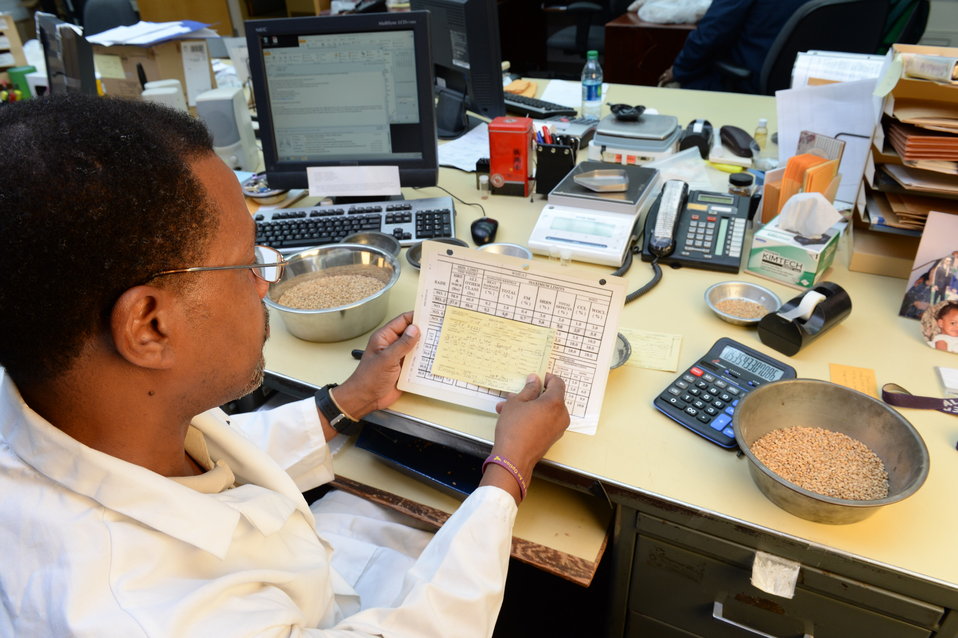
U.S. Department of Agriculture (USDA) Grain Inspection, Packers and Stockyards Administration (GIPSA) Federal Grain Inspection Service (FGIS) employee compares results of tests done on wheat samples against wheat standards chart at the FGIS inspection laboratory in New Orleans, LA on Monday, Nov. 18, 2013.